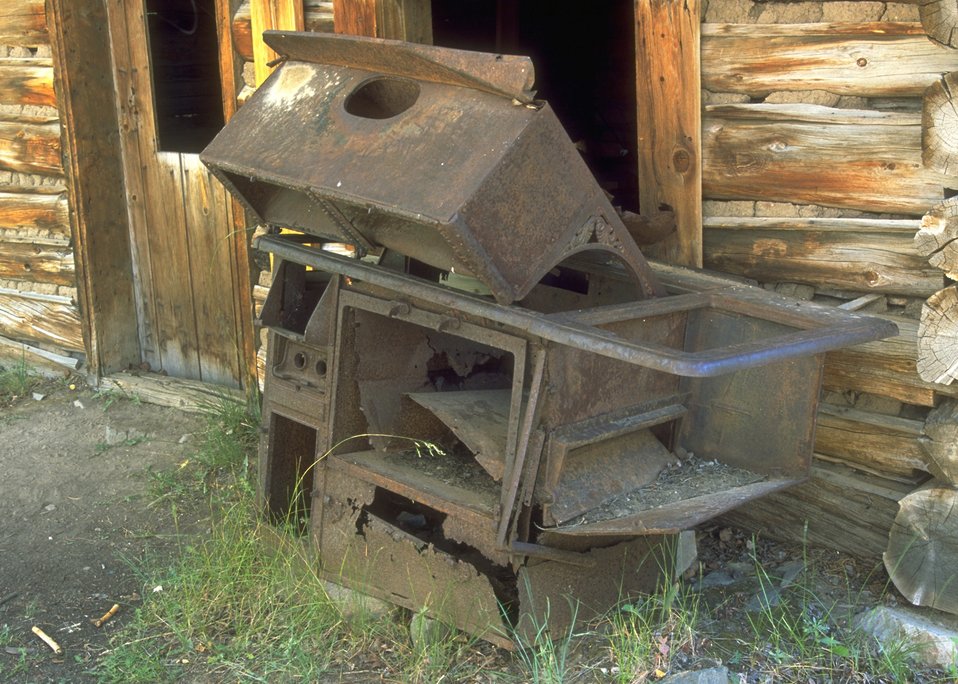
Old stove at Miners Delight, Lander Field Office.